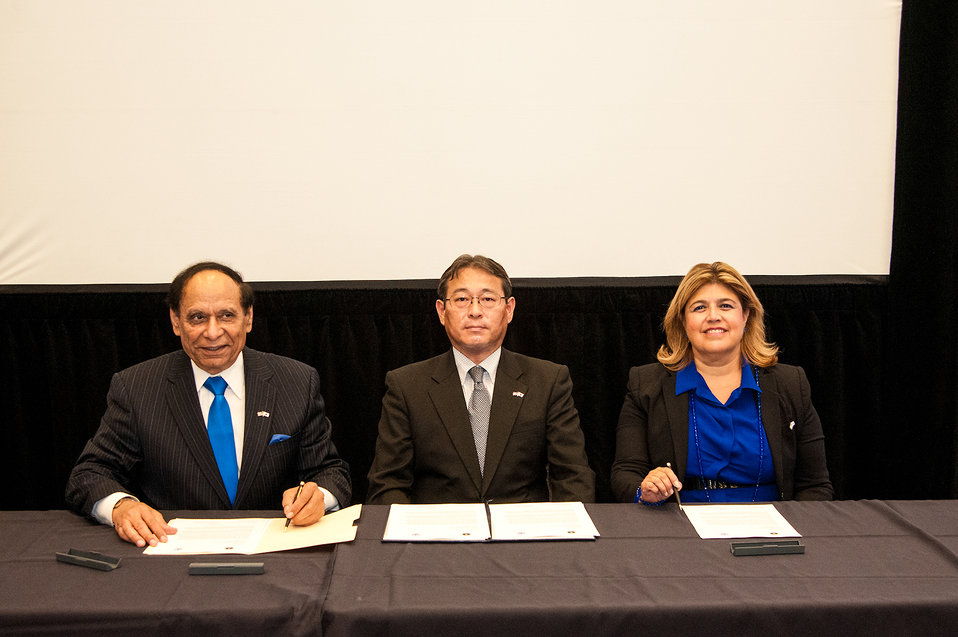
(L to R) U.S. Trade Representatives Ambassador Islam Siddiqui Islam Siddiqui, Japan’s Forestry and Fishery Ministry of Agriculture Division of Food Safety and Consumer Affairs Bureau Director of Labeling and Standards Satoshi Kunii Satoshi Kunii, and U.S. Department of Agriculture (USDA) Agricultural Marketing Service (AMS) Administrator Anne Alonzo sign a memorandum of understanding prior to announcing an important trade agreement with Japan for USDA’s National Organic Program at the Natural Products Expo East conference in Baltimore, MD on Thursday, Sep. 26, 2013.